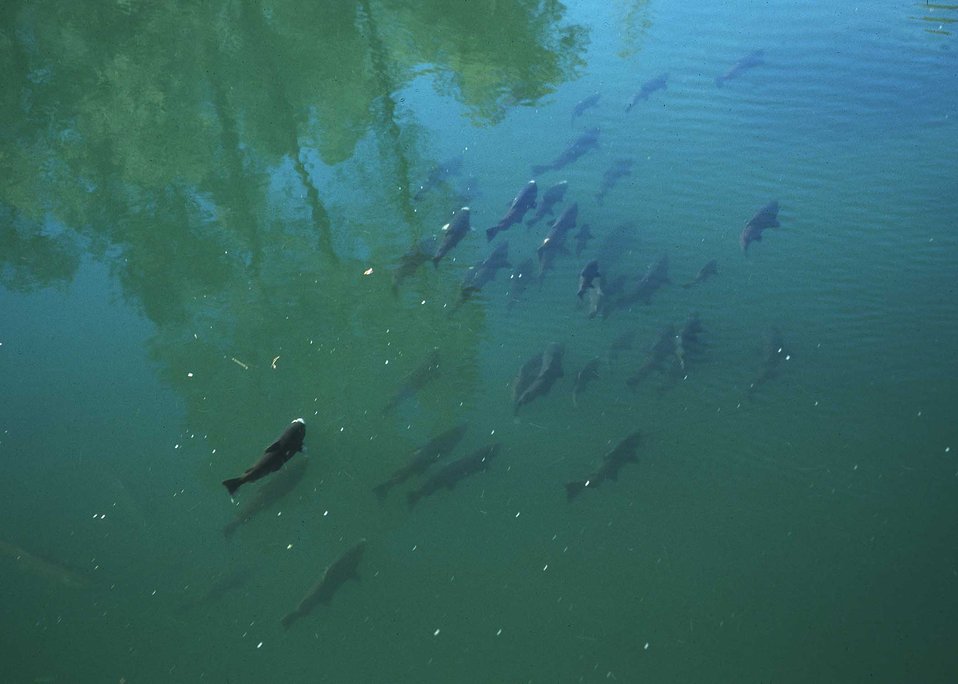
Migrating salmon.